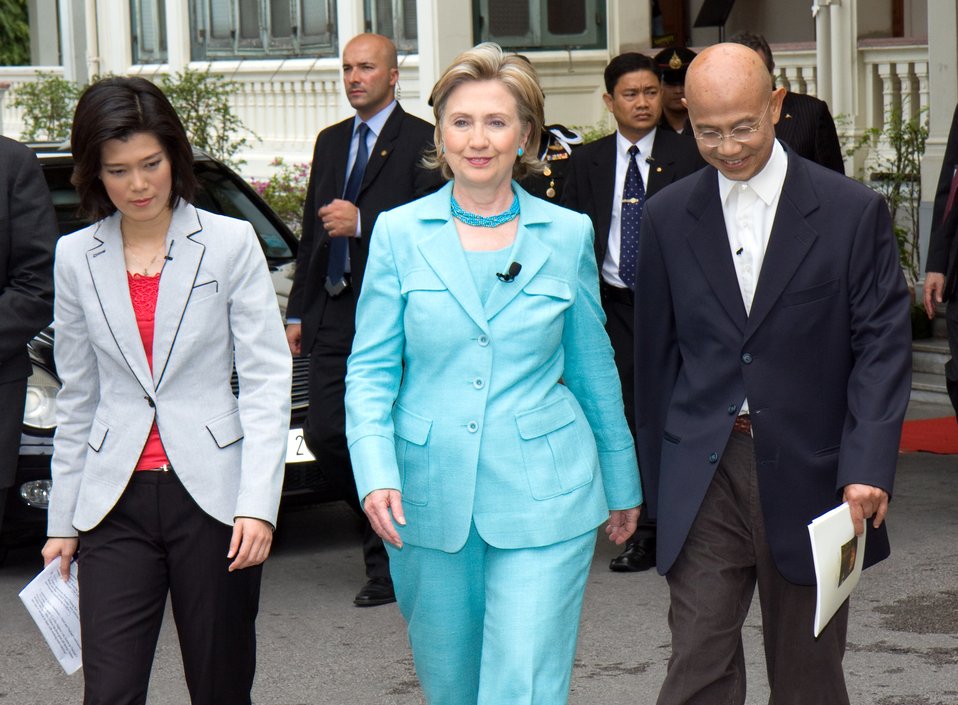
Secretary Clinton Interviews With the Nation Group

U.S. Secretary of State Hillary Rodham Clinton with television hosts Suthichai Yoon and Veenarat Laohapakakul before their interview at Phyathai Palace in Bangkok, Thailand July 22, 2009.